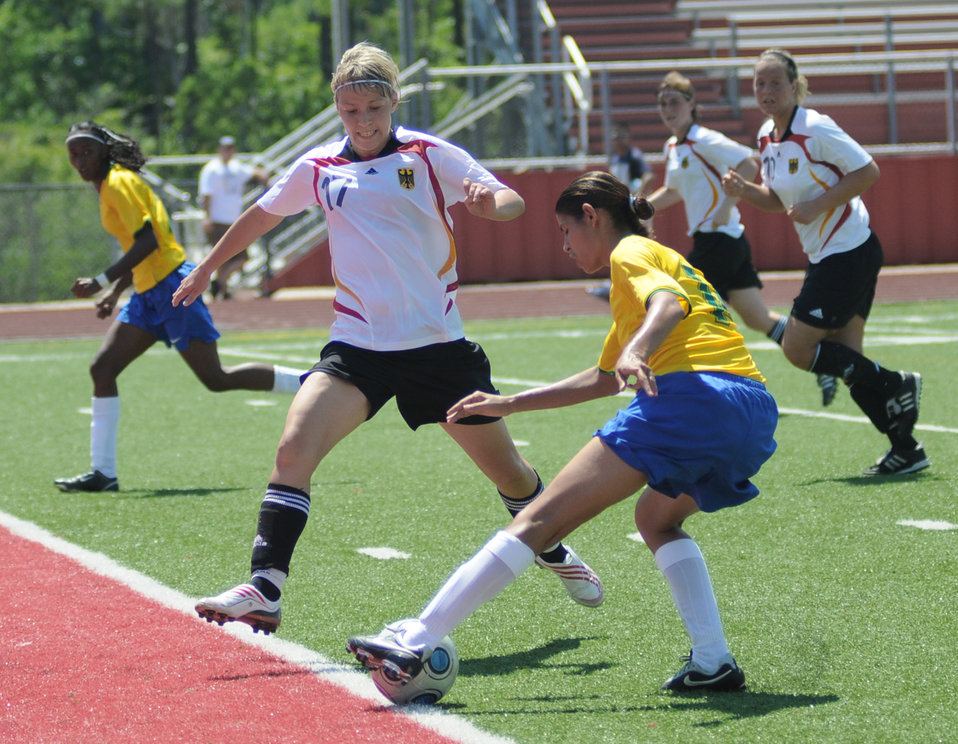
Keesler officials host Women's Soccer Championship

Soccer players from Germany and Brazil compete during the 5th Counseil Du International Sports Militaire Women's Soccer Championship at Biloxi High School Stadium June 7 in Mississippi. The CISM tournament, hosted by officials from Keesler Air Force Base, Miss., includes teams from Brazil, Canada, France, Germany, The Netherlands, South Korea and the United States.